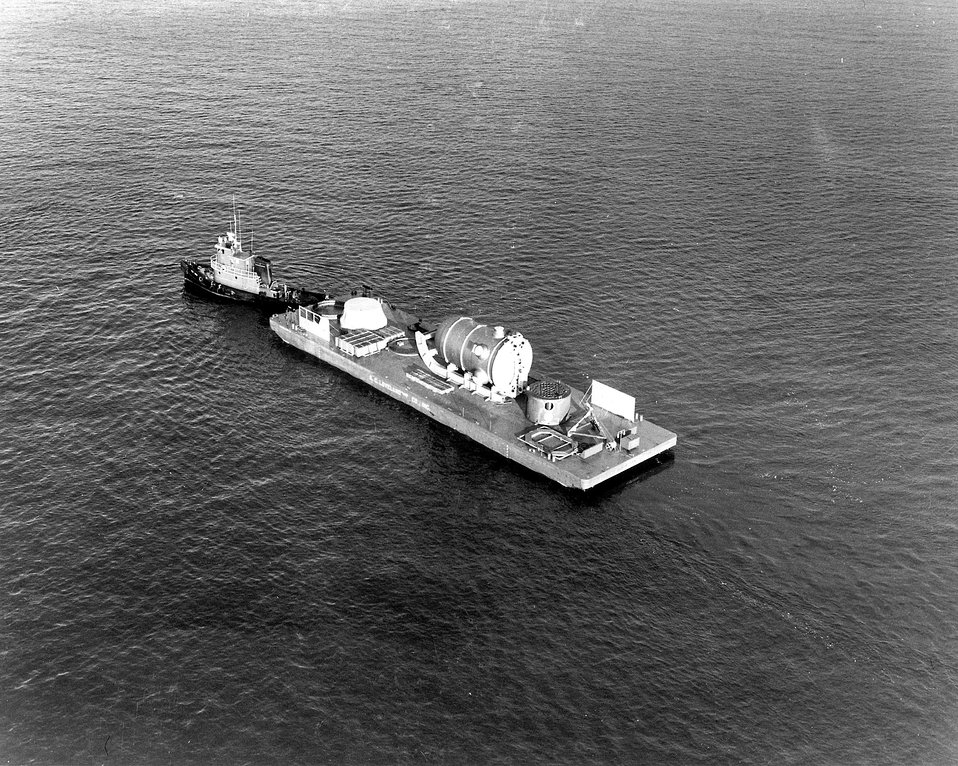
Reactor vessel for the first unit at Baltimore Gas and Electric's Calvert Cliffs Nuclear Power Plant coming up Chesapeake Bay. Circa 1971.